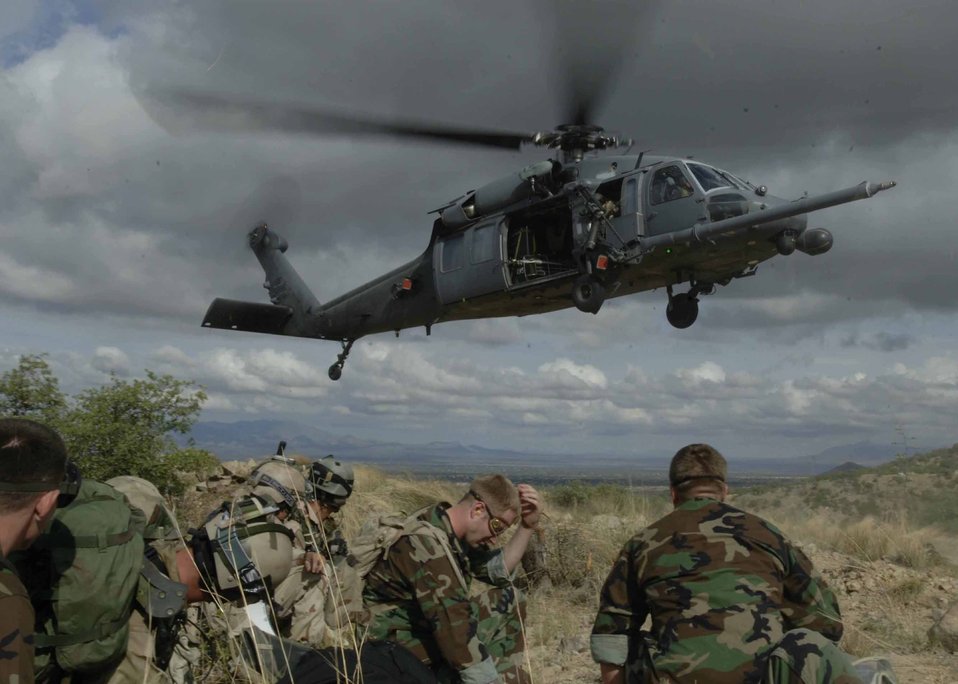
Angel Thunder

Pararescuemen and simulated mass casualty survivors take cover as a HH-60 Pavehawk lands July 27 as part of exercise Angel Thunder. The survivors were flown to Davis-Monthan Air Force Base to a simulated level 2/3 medical facility.